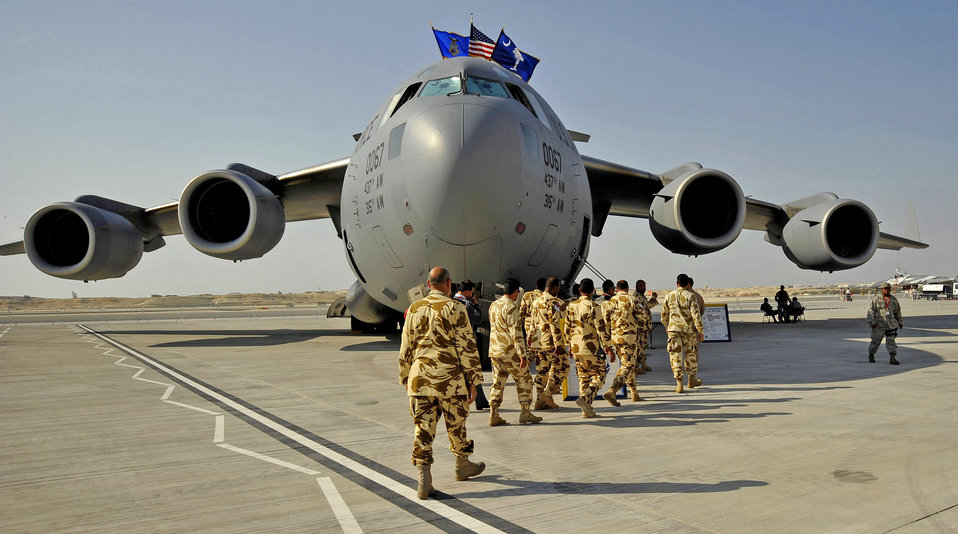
Airmen support inaugural Bahrain International Airshow

Airmen escort members of the Bahraini Royal Air Force onto a C-17 Globemaster III for a tour of the aircraft during the Bahrain International Airshow Jan. 21, 2010.